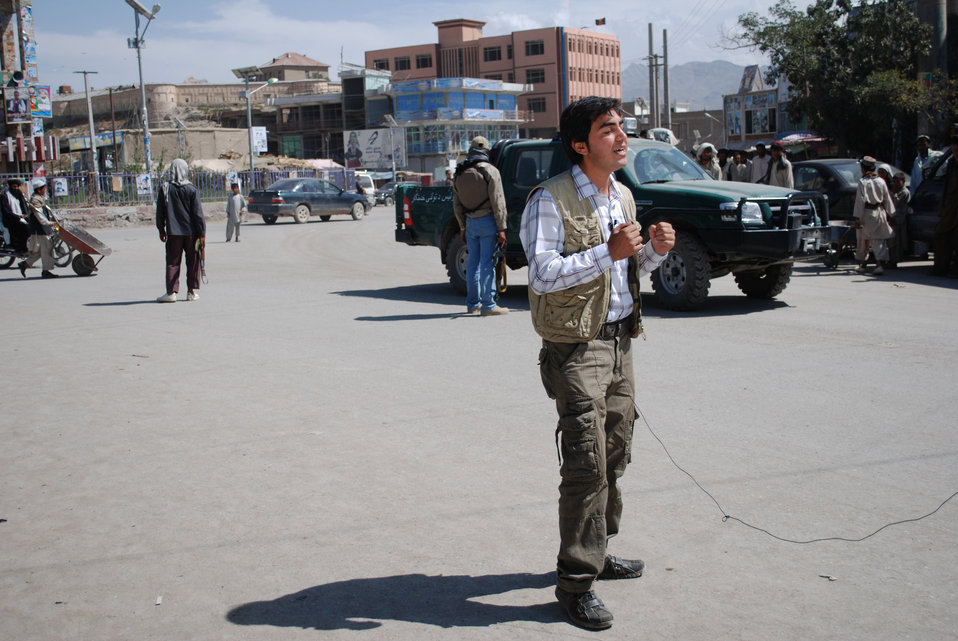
'On the Road' in Paktya Province